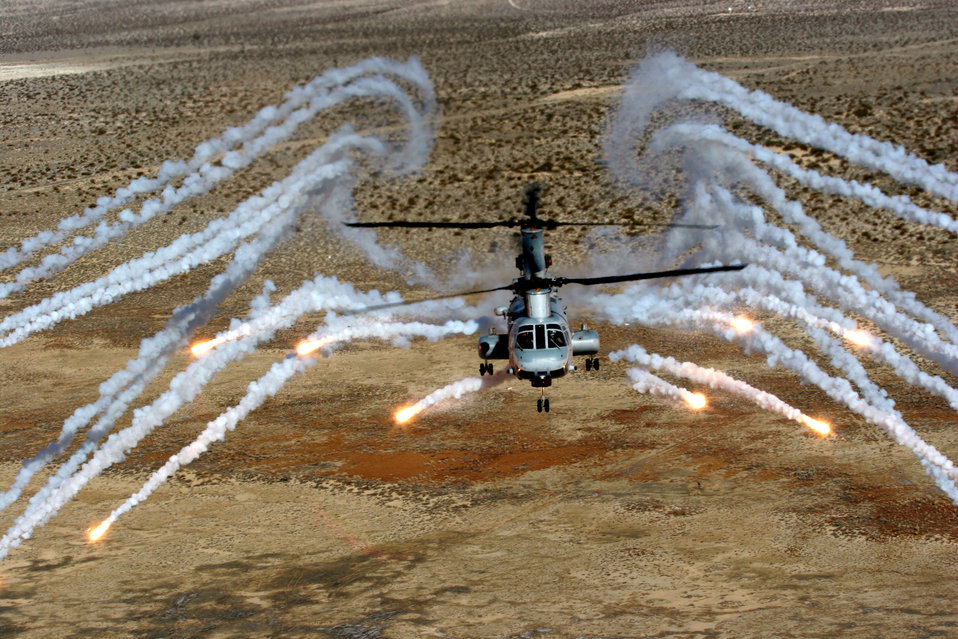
Holloman officials host joint-service aircraft for testing

A CH-46E Sea Knight dispenses infrared countermeasures during a multiplatform countermeasure effective test conducted by the Army, Navy and Marine Corps at White Sands Missile Range in New Mexico. All aircraft used were hosted at Holloman Air Force Base, N.M, including the UH-1Y Venom, CH-53E Super Stallion, MV-22 Osprey, CH-47 Chinook, UH-60 Black Hawk and AH-64 Apache. More than 1,500 infrared countermeasures were dispensed from the aircraft under various test conditions, providing valuable information to be used in theater.